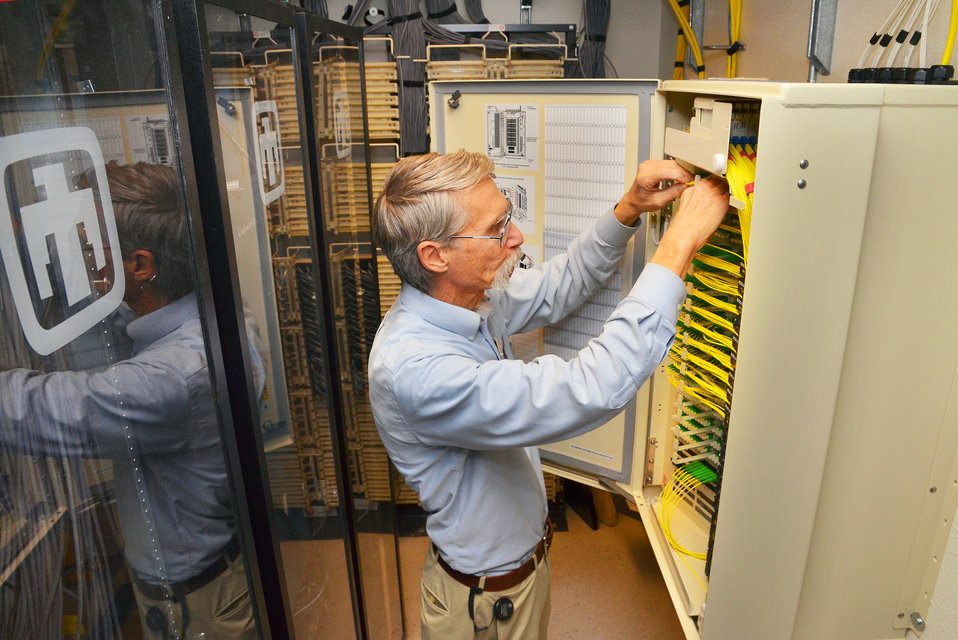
SNL engineer looks at fiber optics in a cable box that replaced heavier and bulkier copper cable for high-speed communications throughout much of the labs. Fiber offers more capacity and is more reliable than copper.